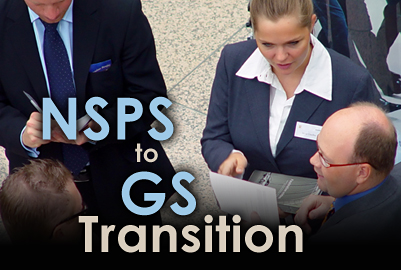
Air Force employees transition out of NSPS